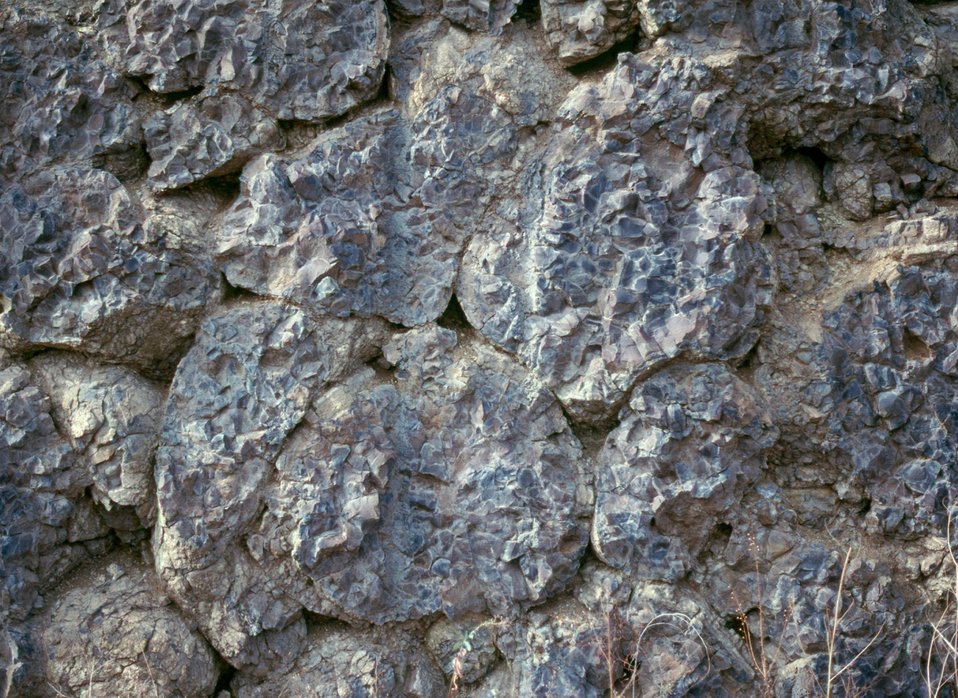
Grangeville Pillow Basalt Cottonwood Field Office UCSC Upper Columbia Salmon Clearwater District